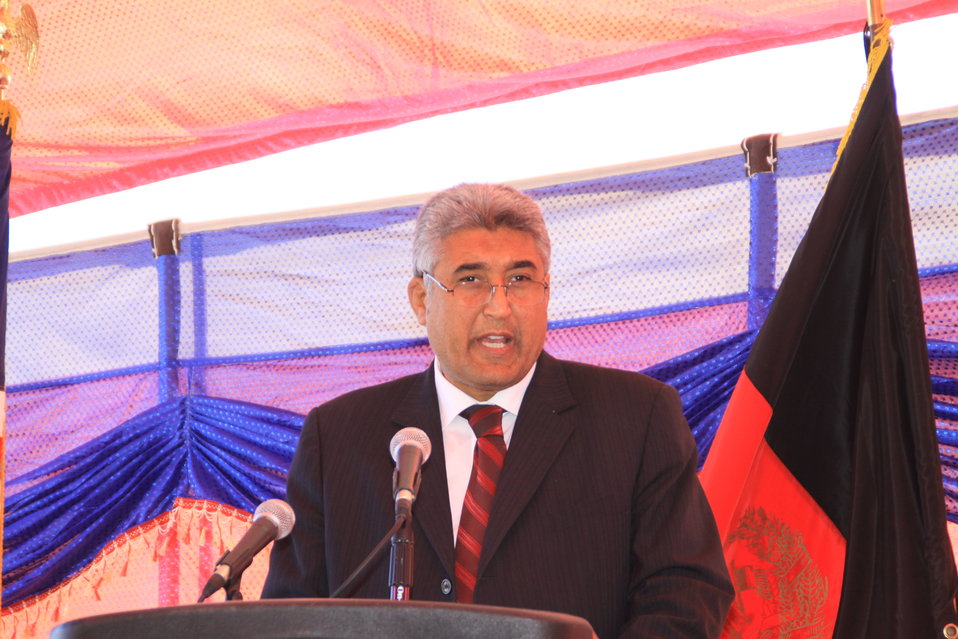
AVIPA Plus Wheat Seed Distribution 101005

US Ambassador Karl Eikenberry and USAID Acting Mission Director Kevin Brownawell joined the Minister of Agriculture, Irrigation and Livestock, H.E. Minister Mohammed Rahimi in signing a Memorandum of Understanding and distributing vouchers to area farmers for wheat and fertilizer.

US Ambassador Karl Eikenberry and USAID Acting Mission Director Kevin Brownawell joined the Minister of Agriculture, Irrigation and Livestock, H.E. Minister Mohammed Rahimi in signing a Memorandum of Understanding and distributing vouchers to area farmers for wheat and fertilizer.